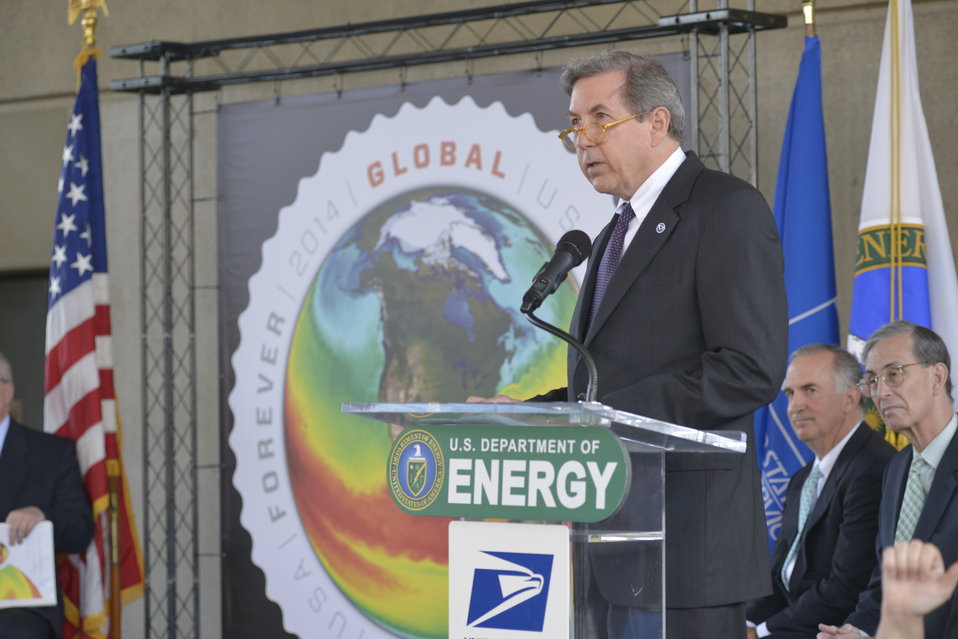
U.S Postal Services introduces a new Global: Sea Surface temperatures forever stamp at the Earth Day program at Department of Energy on April 22, 2014. ( T.Day, C.Williams, C.Anderson II, J.Colin Ph.D, Dr. K. Sullivan, K.Tobin Ph.D, W. Gicher Jr)